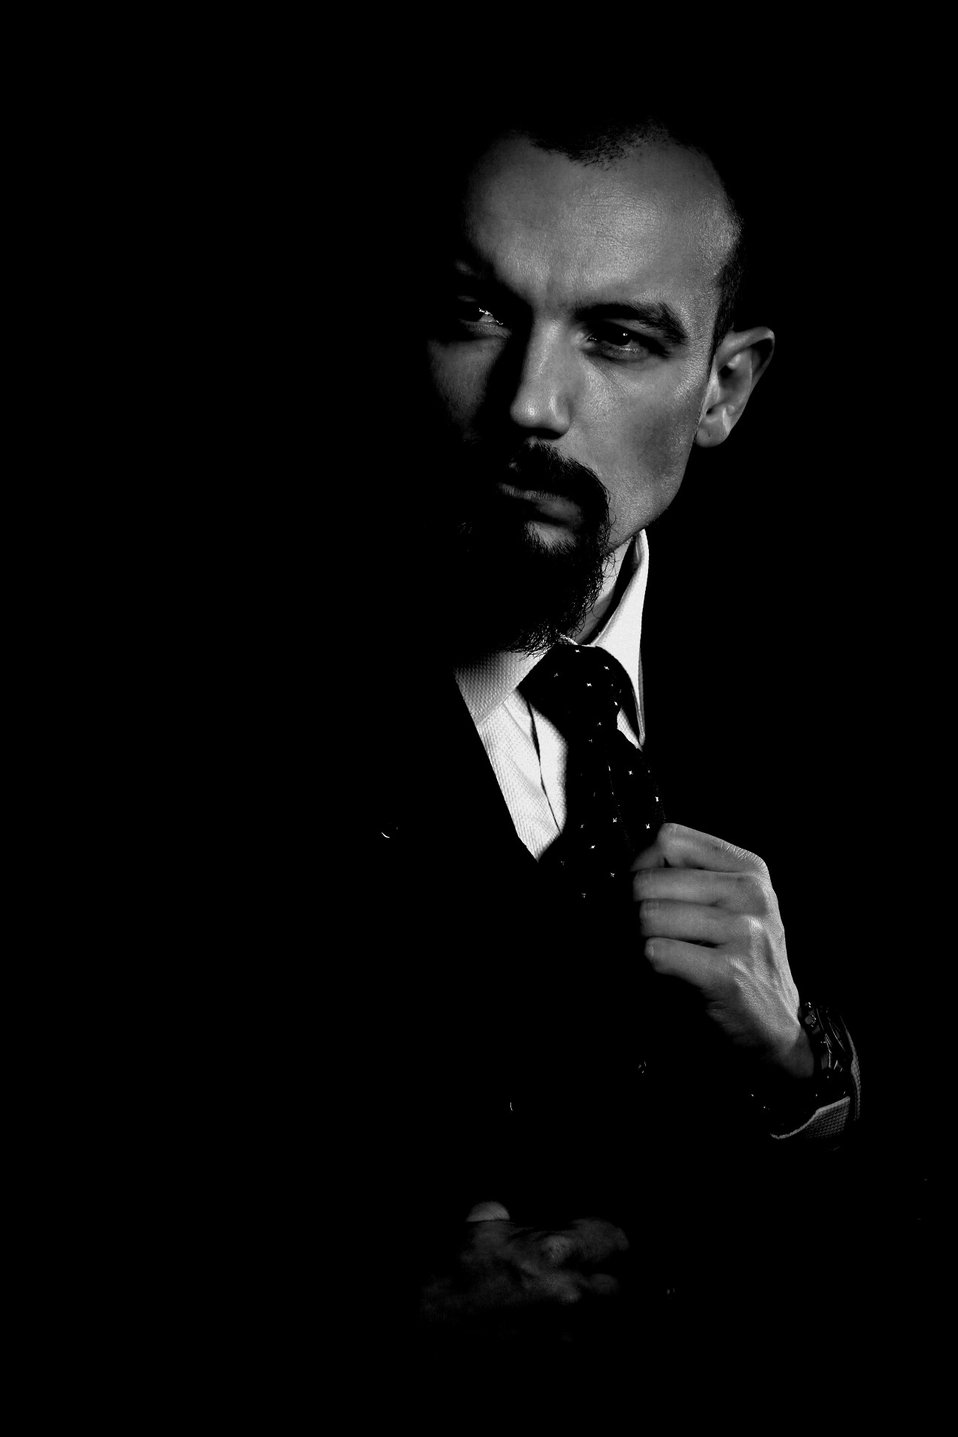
Pattberg - end of translation

Global think tank.